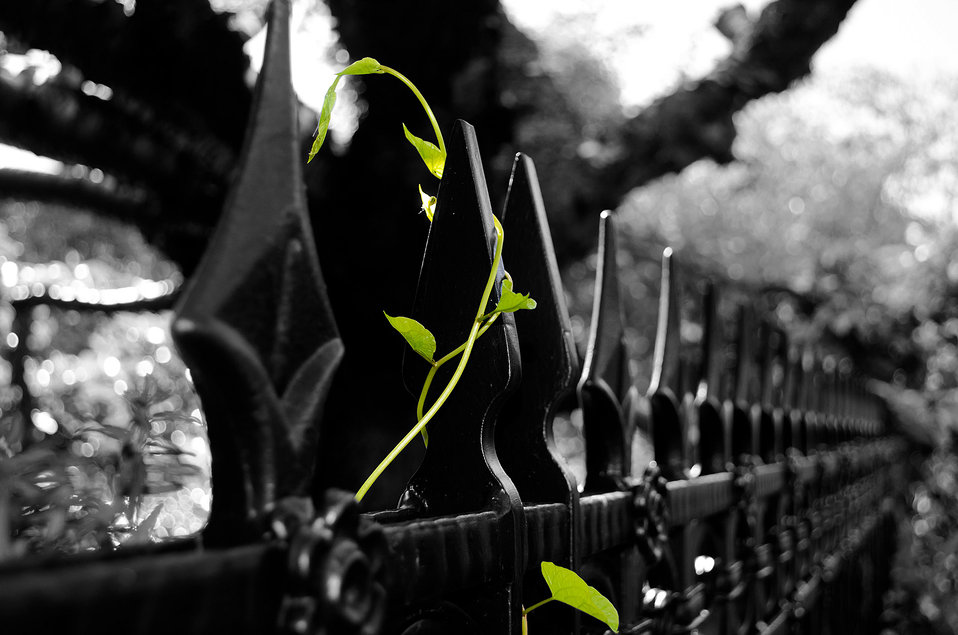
Green plant on the iron fence.